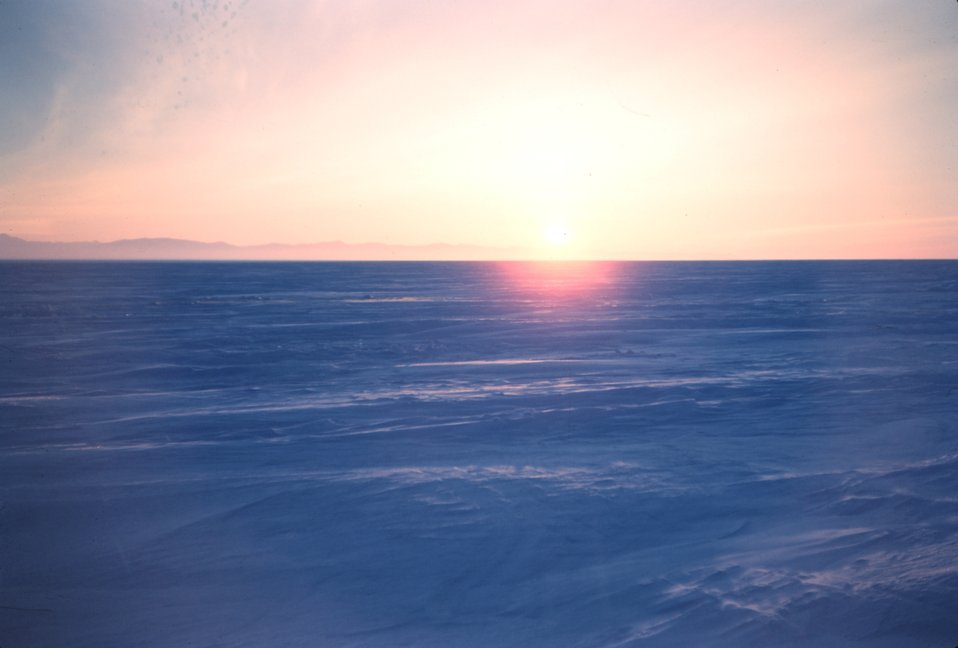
A winter sunset over the North Slope - note the parallel ridges in the snow. They always lay ENE-WSW in this area. The orientation of the ridges was used to navigate away from camp.